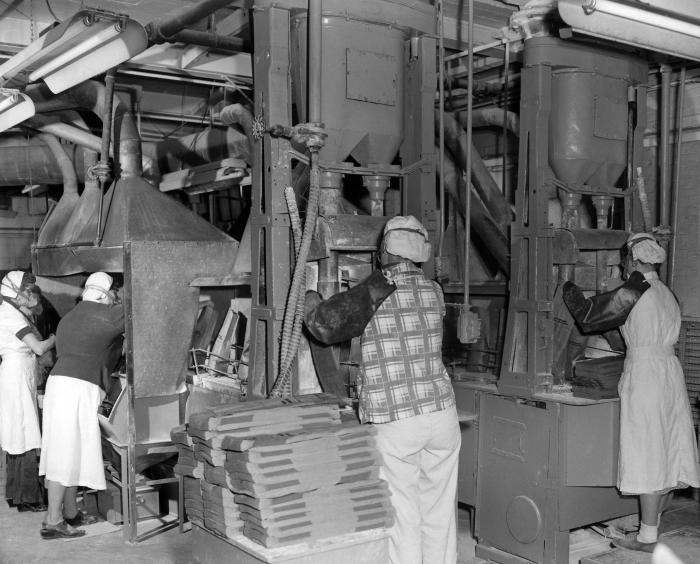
This 1953 photograph was provided by the Center for Disease Control's (CDC), National Institute for Occupational Safety and Health (NIOSH). The image depicted a number of female employees who were packaging lead arsenate, which is the lead salt or ester of arsenic acid. Note that all workers were using personal protective equipment including caps, face masks, eye protection, and coveralls over their clothing, in order to guard them against workstation contaiminants.Workers can be exposed to lead through inhalation of fumes and dusts, as well as through ingestion as a result of lead-contaminated hands, food, drinks, cosmetics, tobacco products, and clothing. Furthermore, workers can take lead home on their clothes, skin, hair, tools, and in their vehicles, potentially exposing their families to this element's harmful health effects.